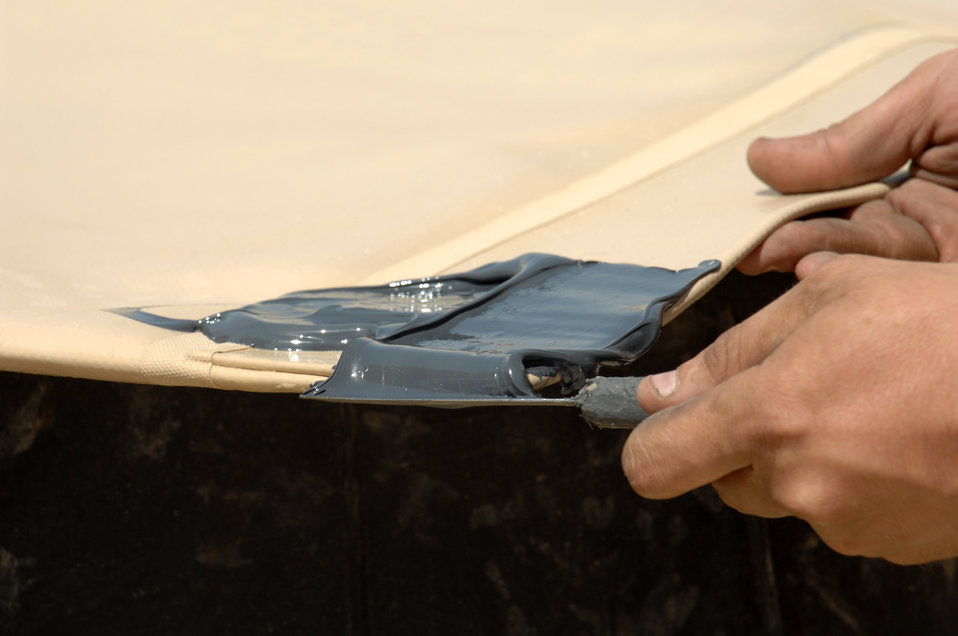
Kirkuk Airmen upgrade fuel storage

The corner of a new fuel bladder is sealed during installation June 19 at Kirkuk Regional Air Base, Iraq. The bladder will be filled with JP-8 jet fuel. Fuel storage bladders are collapsible, flexible storage containers that provide temporary as well as long term fuel storage.